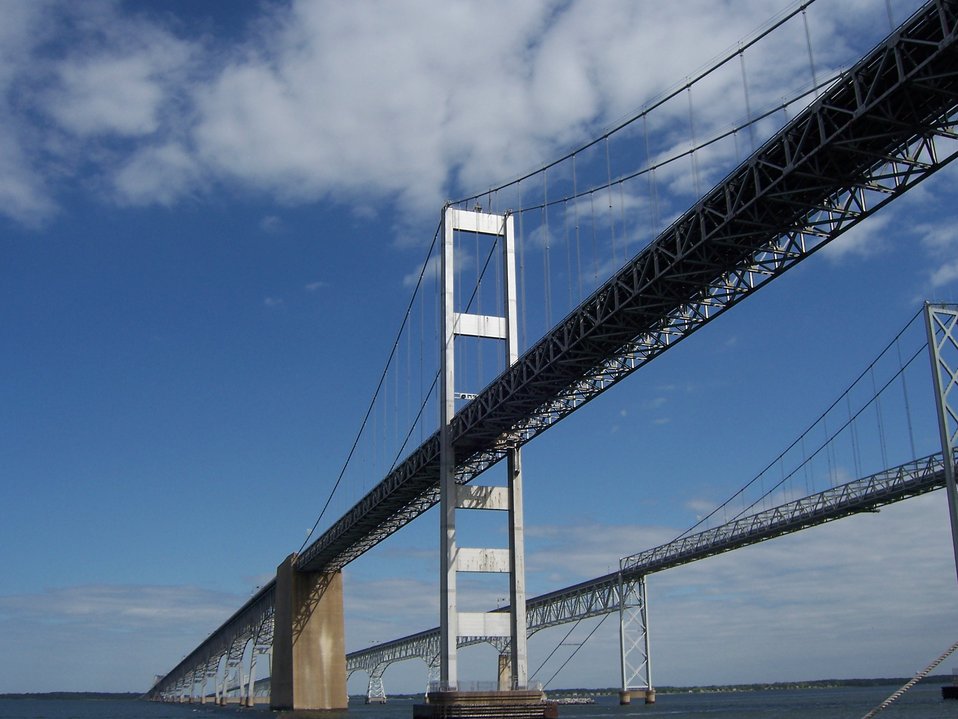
Dual spans of the U.S. 50/ U.S. 301 Chesapeake Bay Bridge in upper Chesapeake Bay.